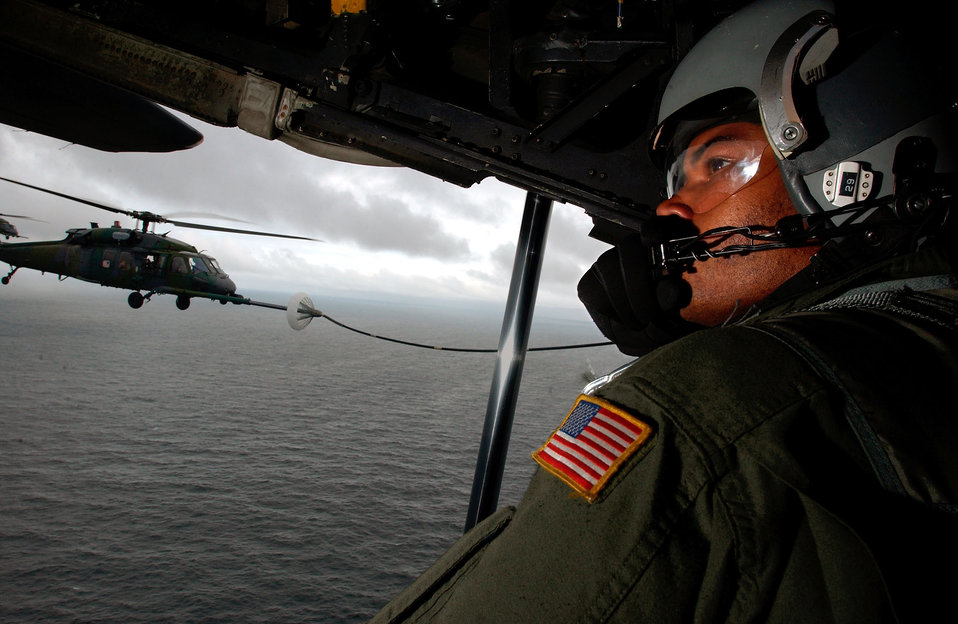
Chatting over seas

OVER THE ATLANTIC OCEAN -- Staff Sgt. Deshield Godet, a loadmaster on an MC-130P Combat Shadow, talks with pilots while an HH-60G Pave Hawk refuels after completing a mission into the U.S. Embassy in Liberia Aug. 6.